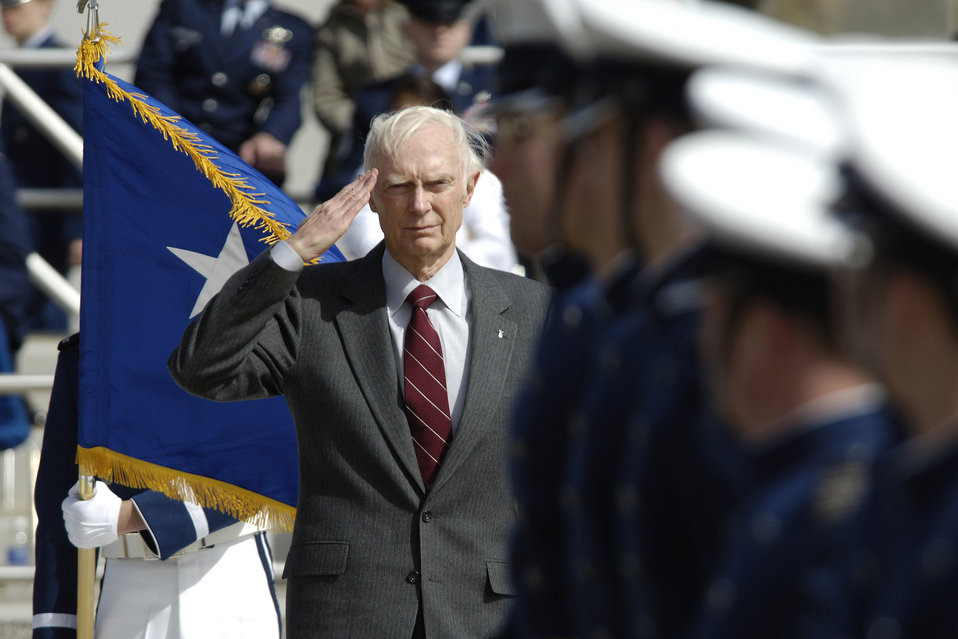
Academy salutes founders

Retired Lt. Gen. Robert D. Beckel salutes during the pass in review of the cadet wing during the Founders Day and Sponsors Day Parade April 5 at the U.S. Air Force Academy in Colorado. The parade, serving two purposes, honored the authorization and founding of the Academy, which began construction July 11, 1955. The parade also honored the 3,500 cadet sponsors; those men, women and families who open their hearts and homes to members of the cadet wing to enhance cadet life and develop officers of character. General Beckel graduated with the class of 1959.